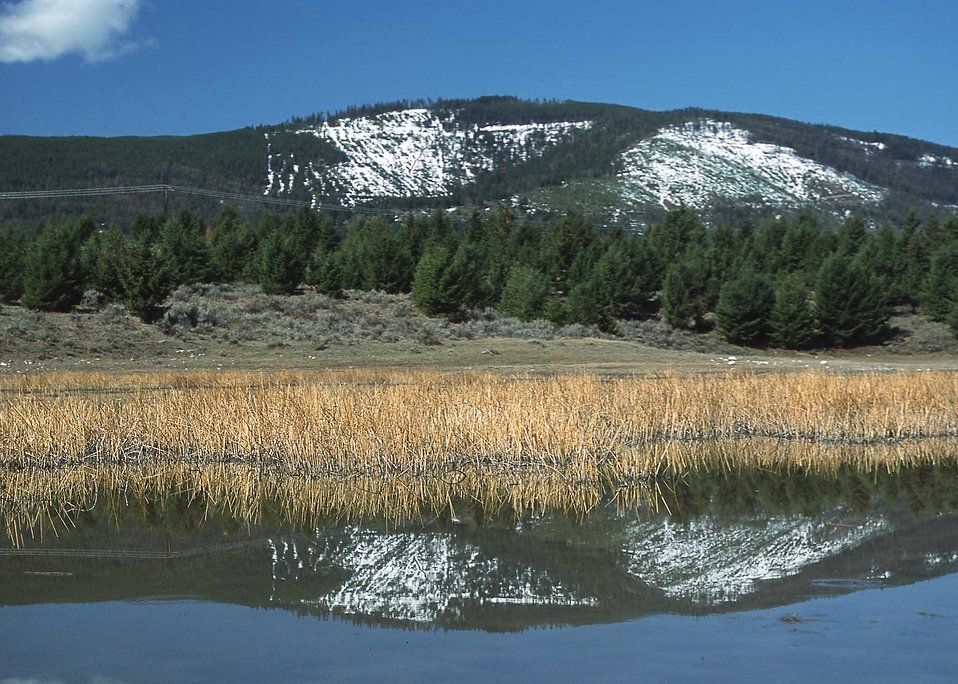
Wetland in Powell County, MT.